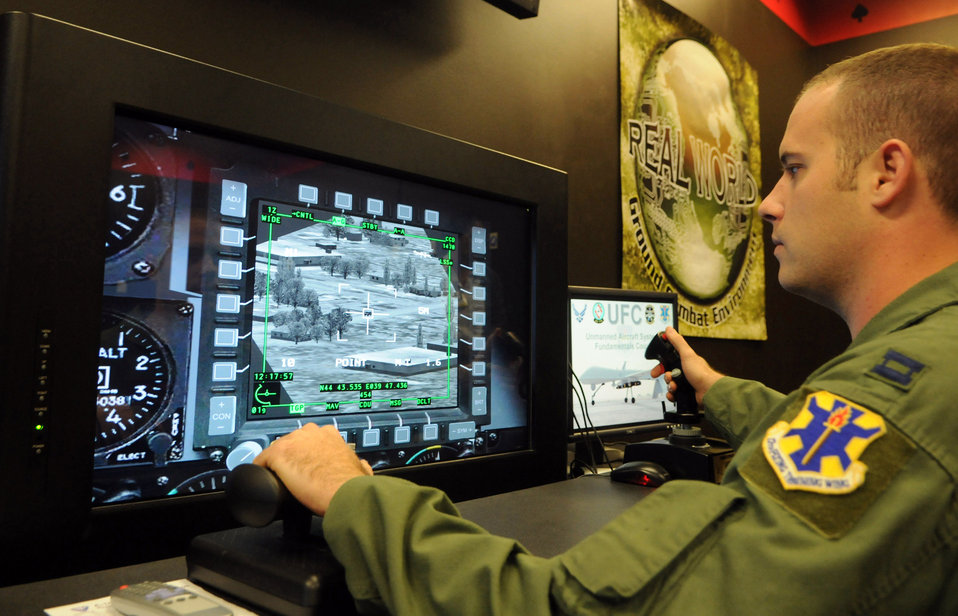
Future UAS pilots will simulate air and land battles in course at Randolph AFB

Capt. Sam Allen, 563rd Flying Training Squadron instructor and Unmanned Aircraft Systems Fundamentals Course director at Randolph Air Force Base, Texas, operates the controls of a battlespace simulator in the course's laboratory.